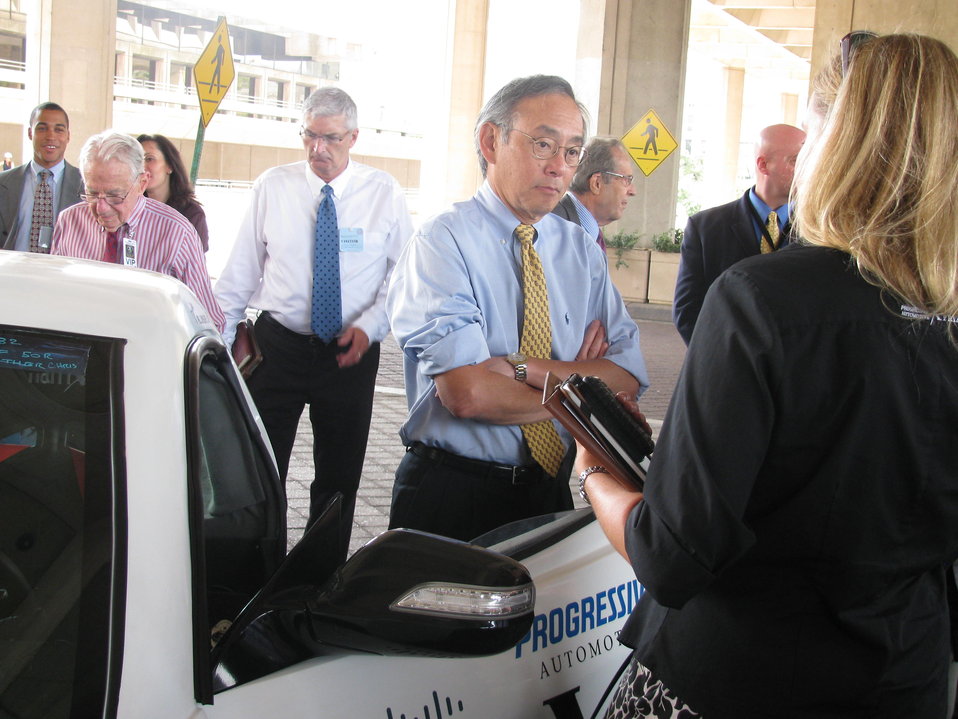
X Prize 015